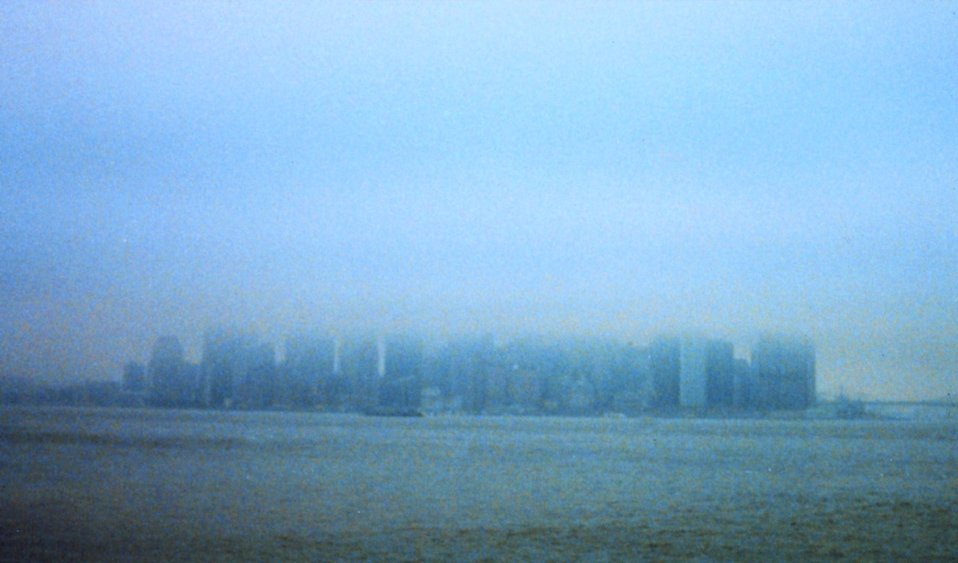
Manhattan skyline truncated by fog